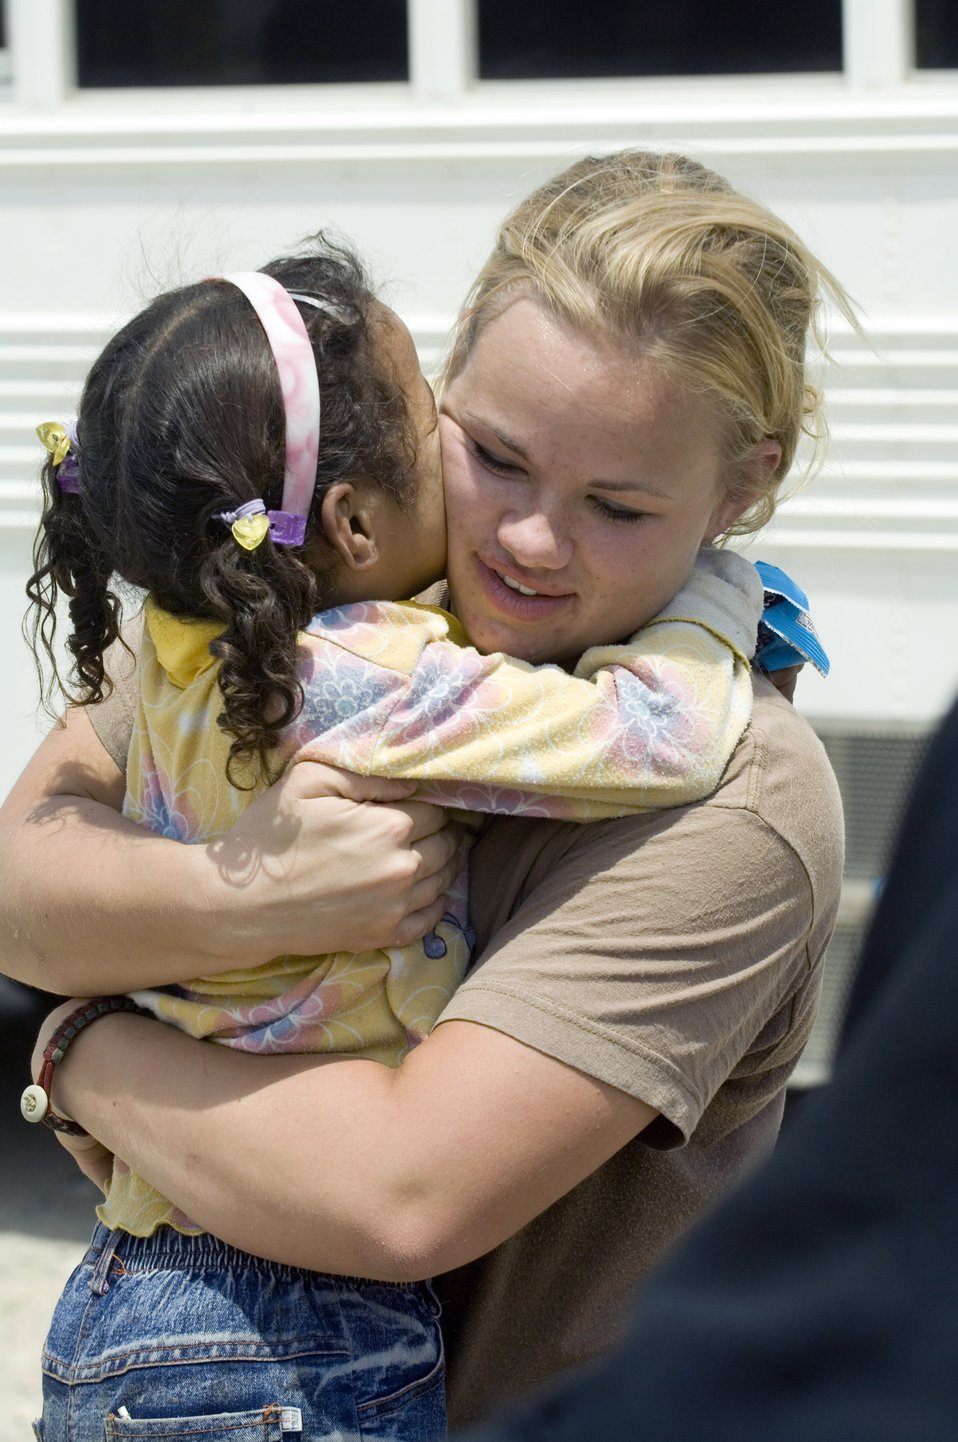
Americans, Iraqis interact at historical monument

Senior Airman Ashley-Louise Jacobsen hugs a young Iraqi girl goodbye at the end of an Aug. 21 visit by 80 Iraqi nationals to the historical Ziggurat located on Ali Air Base, Iraq. The Ali AB First Four Council sponsored the visit. This is the first time in more than 10 years that Iraqi civilians have been allowed to step on the grounds of the historical site, which was built in the ancient city of Ur and includes the house of the biblical prophet Abraham. Airman Jacobsen is a member of the 407th Expeditionary Logistics Readiness Squadron at Ali AB.